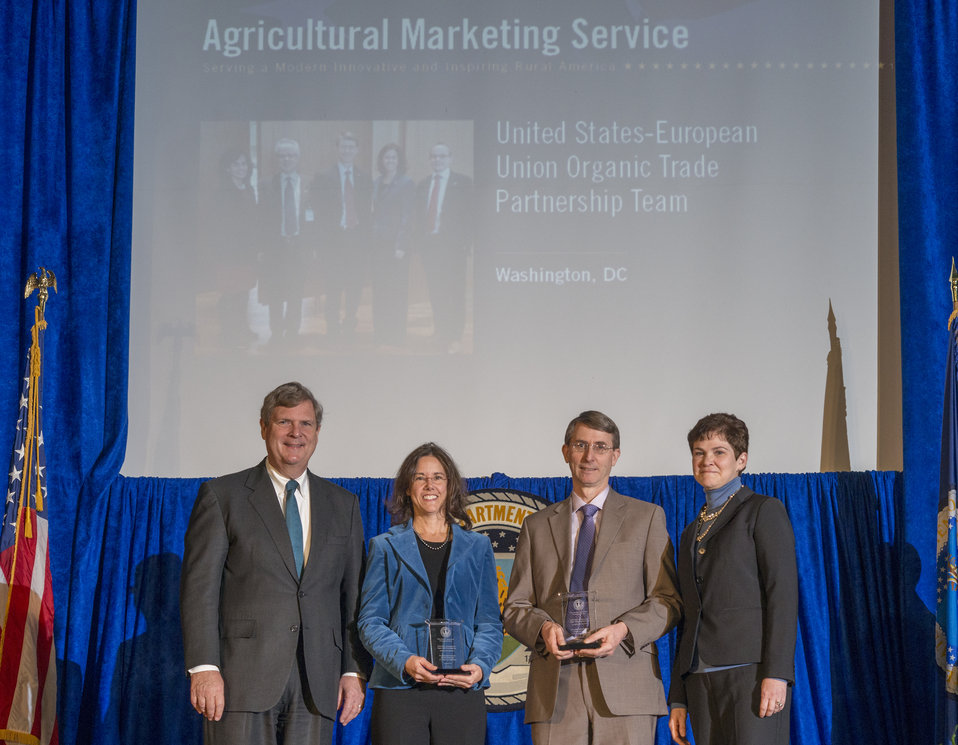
Agriculture Secretary Tom Vilsack and Agriculture Deputy Secretary Krysta Harden present the Secretary’s Honor Award to the Agricultural Marketing Service (AMS) United States-European Union Organic Trade Partnership Team leaders Kelly Strzelecki and Miles McEvoy at the 2013 Secretary's Honor Awards in the Jefferson Auditorium at the U.S. Department of Agriculture (USDA) in Washington, D.C. on Wednesday, Dec. 11, 2013.